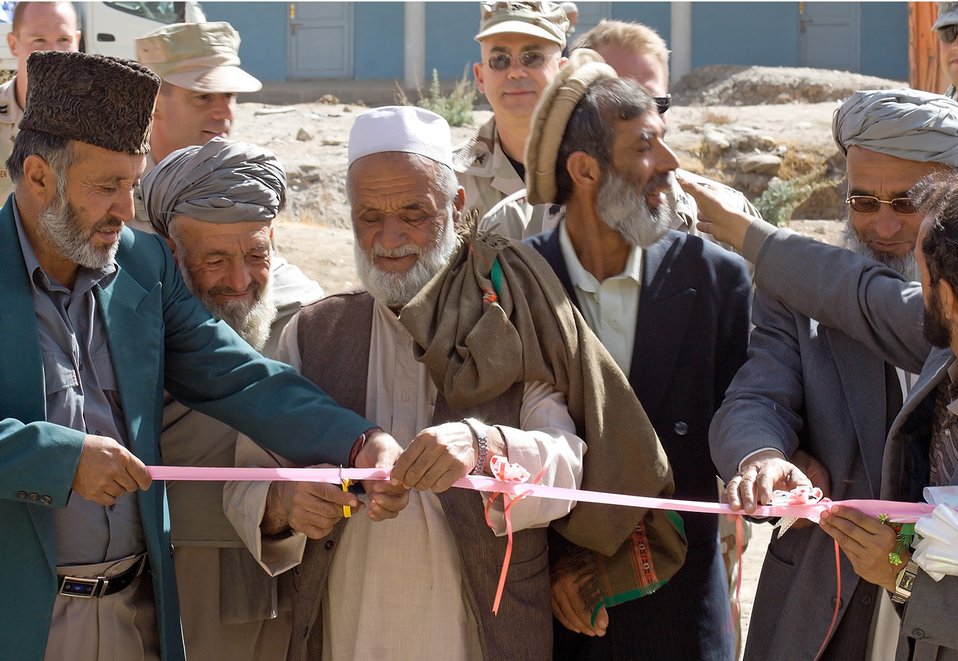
Reconstruction team dedicates water well

Local Afghan village elders and Rohka School faculty members cut a ribbon marking the dedication of the school's new water well on Oct. 21. The well was funded by the Panjshir Provincial Reconstruction Team's Commander's Emergency Response Program. Before construction of the well, students drank water drawn from a nearby irrigation ditch.